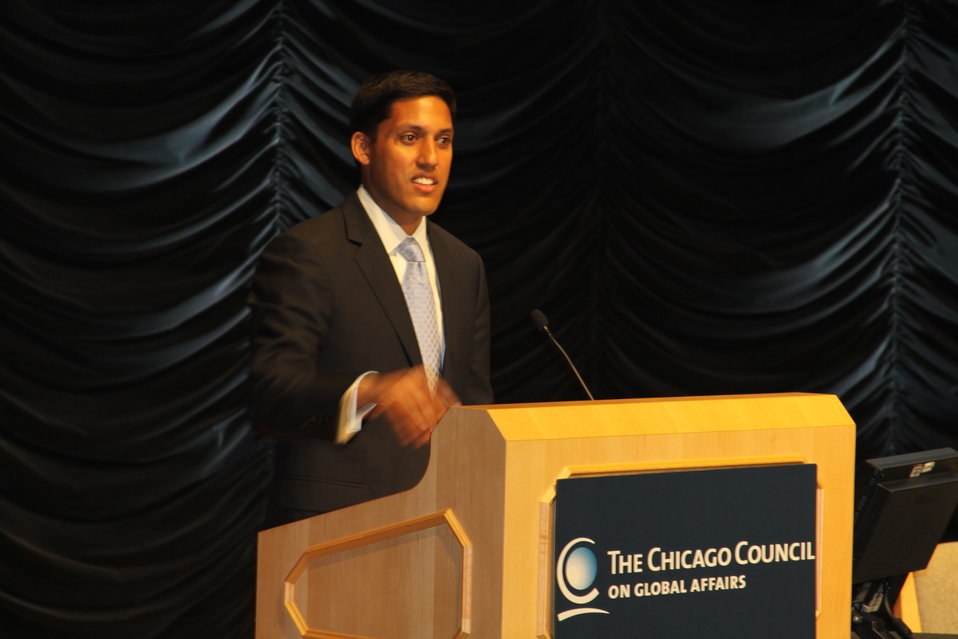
Administrator Shah Delivers Remarks on the True Yields of Food Security

USAID Administrator Rajiv Shah delivers remarks on the True Yields of Food Security, at the Chicago Council on Global Affairs' Symposium on Global Agriculture and Food Security in Washington, D.C., on May 24, 2011.